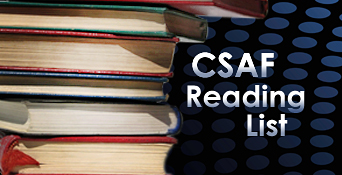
General Schwartz recommends new reading selections

Continued education is a crucial part of being a professional warrior. This quarter's reading recommendations offer a perspective to tackle the challenges of today and tomorrow.